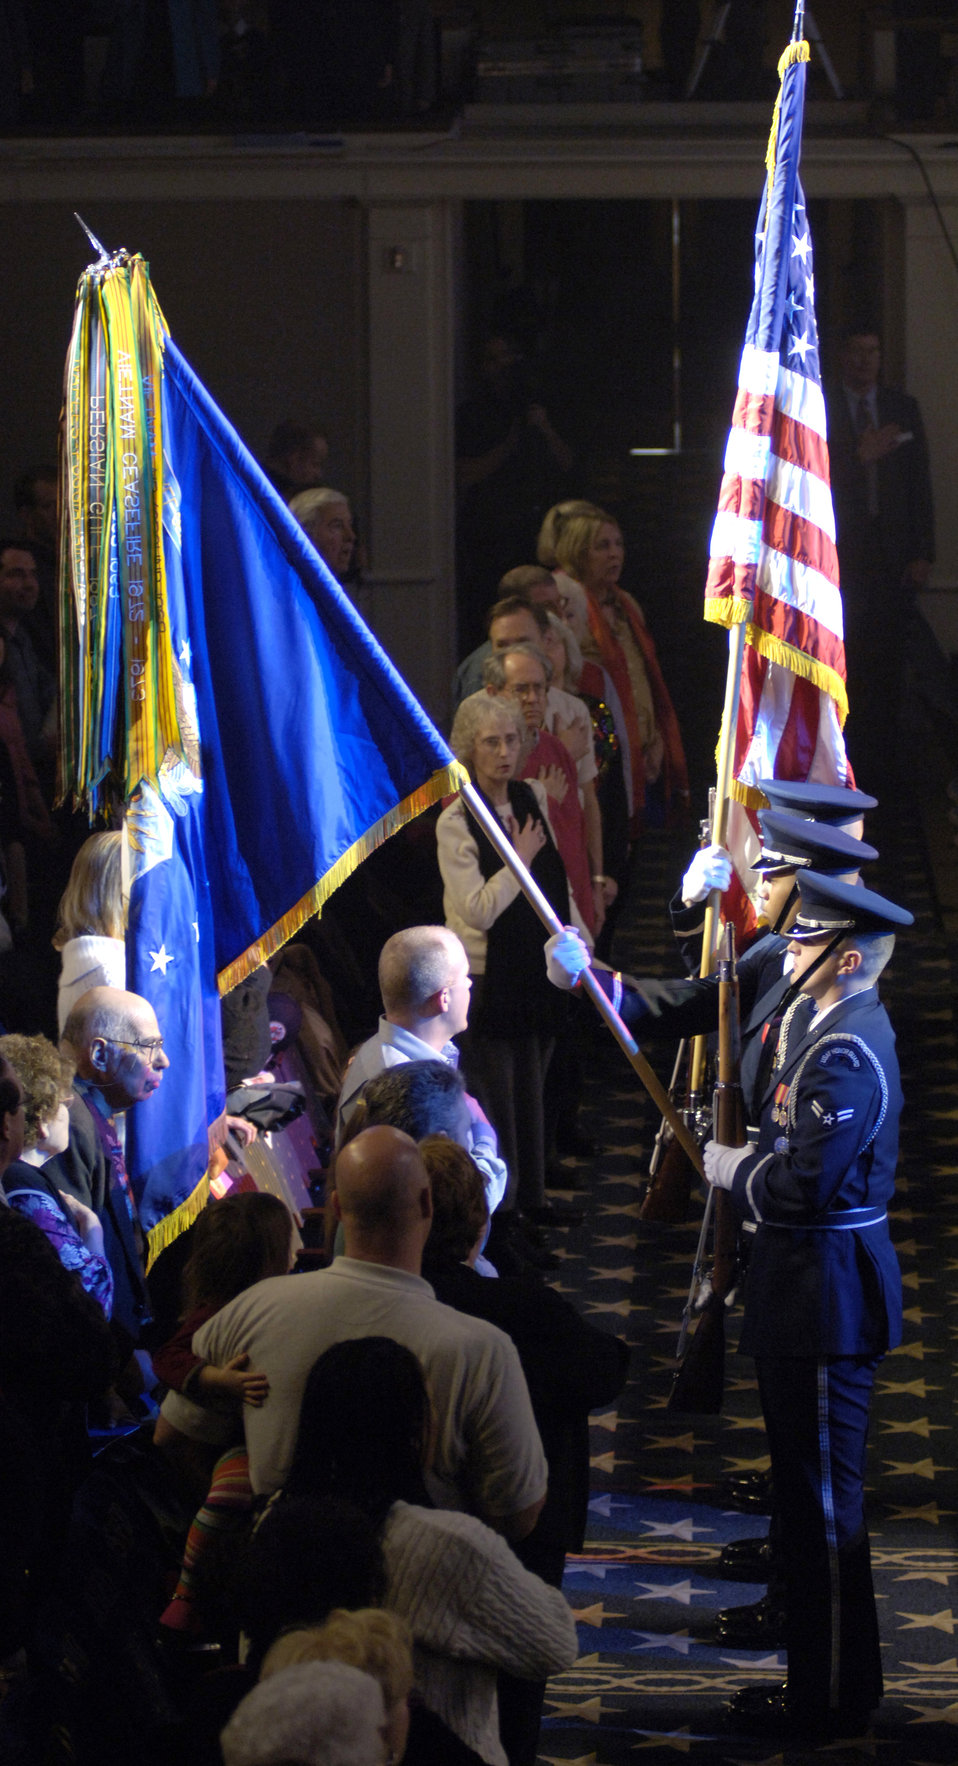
USAF Band guest artist series

Members of the US Air Force Honor Guard post the colors at the start of the US Air Force Band's final concert of this season's guest artist series, Sunday, Mar. 5, 2006, in Washington, D.C. The Air Force band capped off the 40th anniversary of hosting the series by performing with country music star Mark Wills, along with the Air Force Reserve Pipe Band from Robins Air Force Base, Ga.